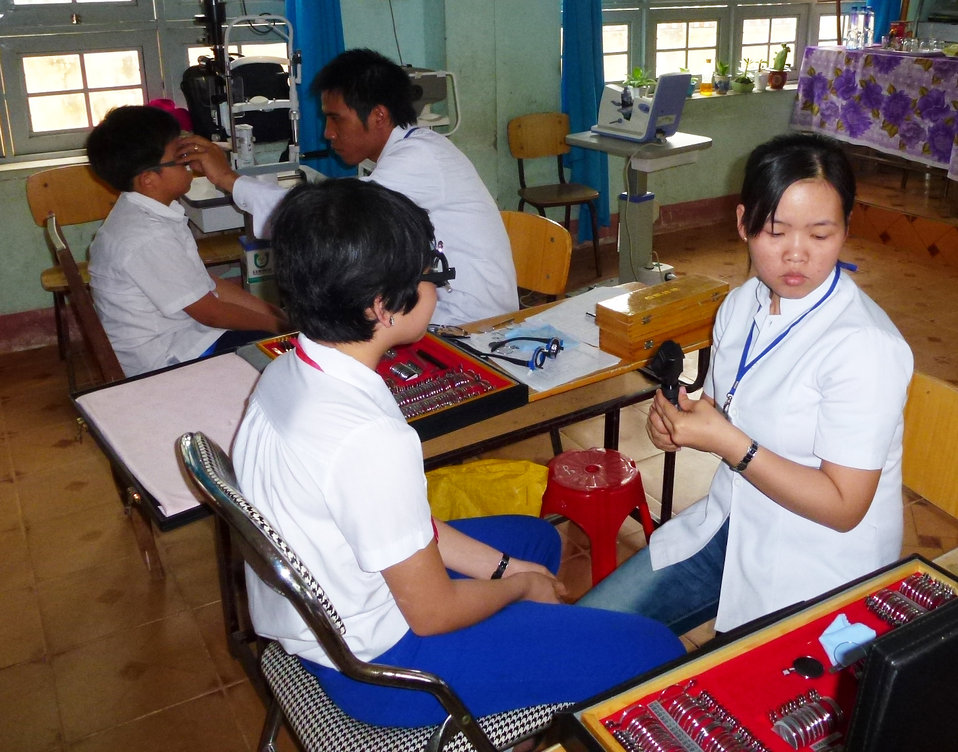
Eye screening at Phan Dinh Phung Primary School

USAID and HKI support refractive error screening examination for students at Phan Dinh Phung Primary School in Kon Tum.